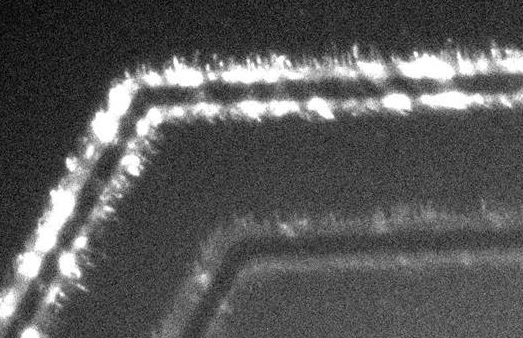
Nanowires

Optical microscope image of nano LEDs emitting light.